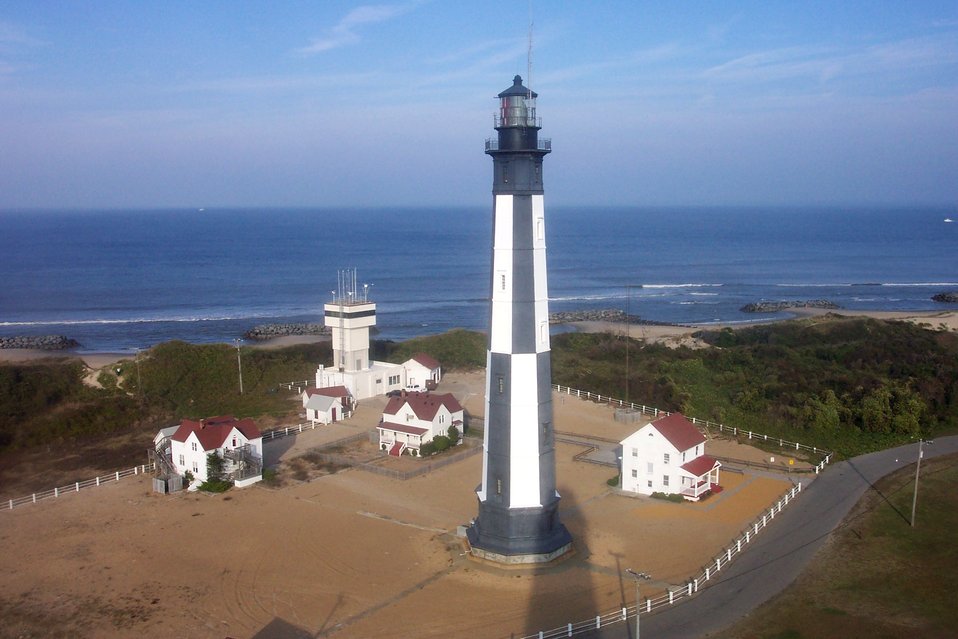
Cape Henry Lighthouse as seen from the top of Old Cape Henry Lighthouse.